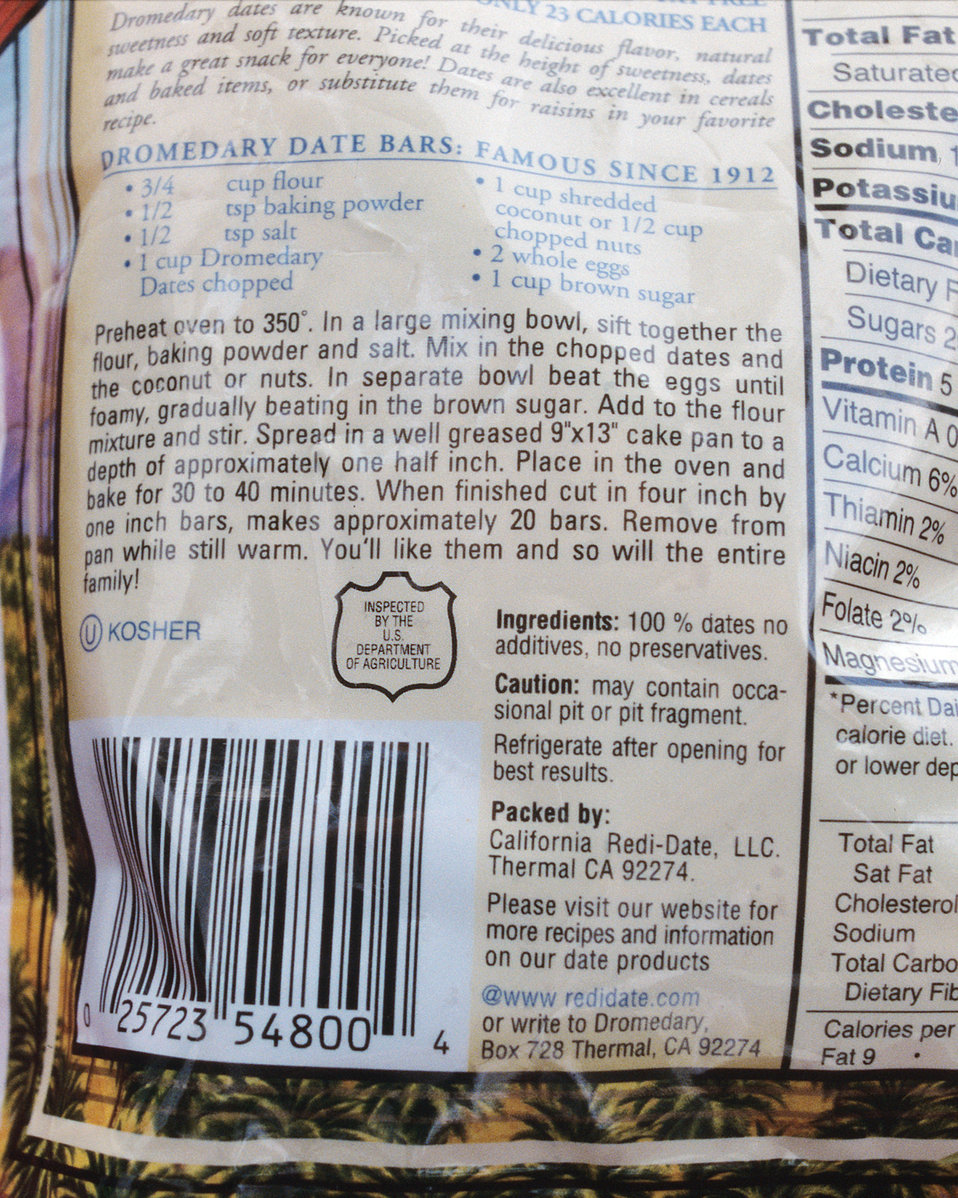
The U.S. Department of Agriculture (USDA) Agricultural Marketing Service (AMS) Processed Products Division offers a variety of resources that may be used to establish the quality of processed fruit, vegetables, and other related products. These resources broadly consist of the documents listed below. Voluntary U.S. grade standards are issued under the authority of the Agricultural Marketing Act of 1946, which provides for the development of official U.S. grades to designate different levels of quality. These grade standards are available for use by producers, suppliers, buyers, and consumers. As in the case of other standards for grades of processed fruits and vegetables, these standards are designed to facilitate orderly marketing by providing a convenient basis for buying and selling, for establishing quality control programs, and for determining loan values.